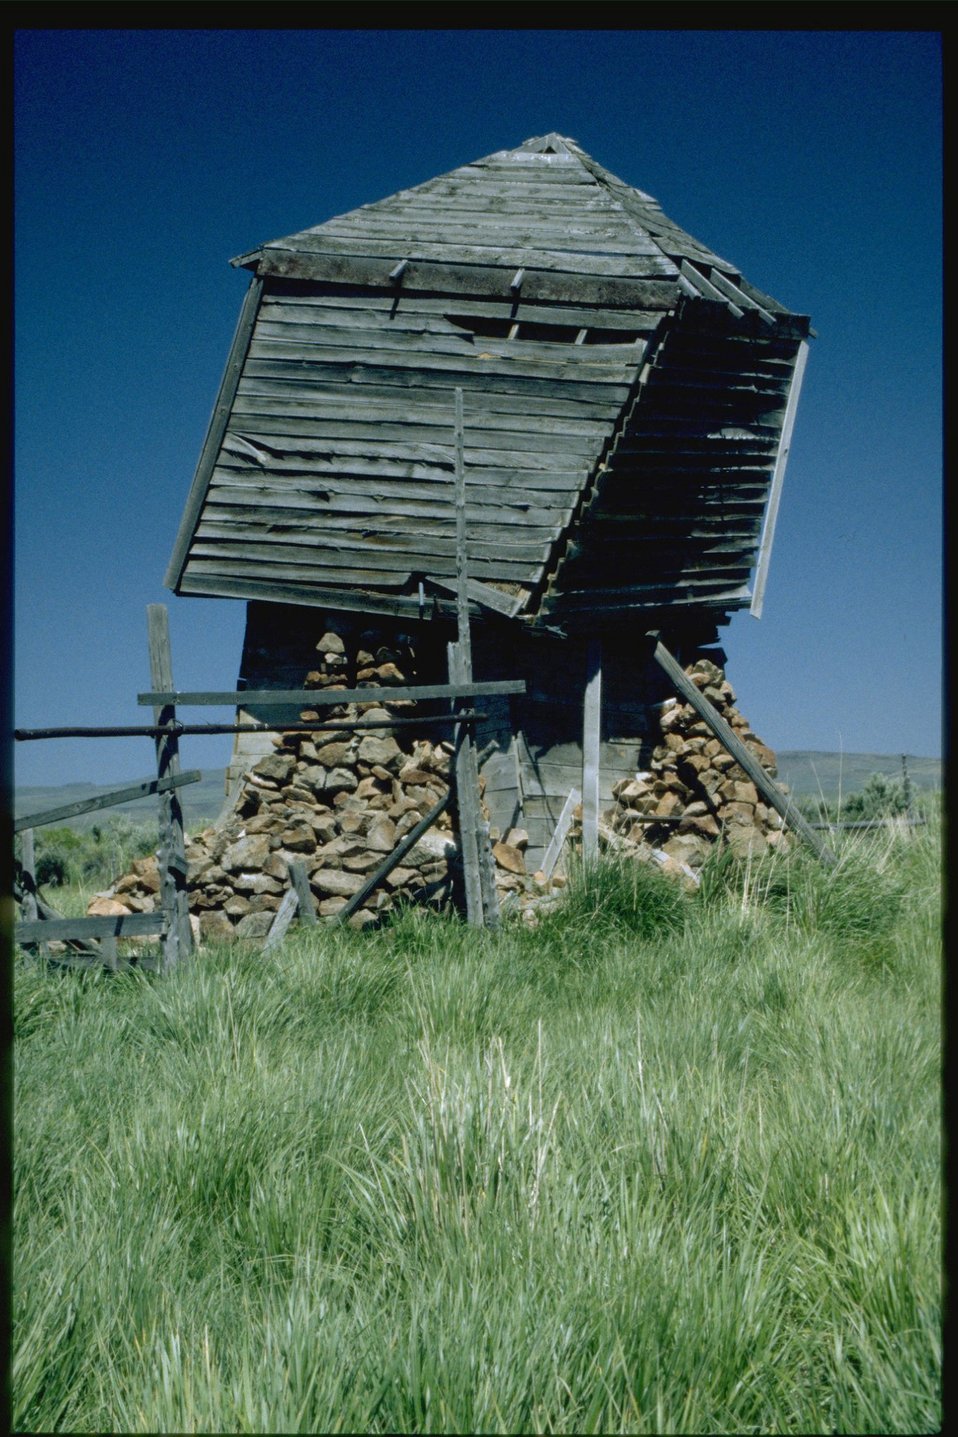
Shirk Ranch.